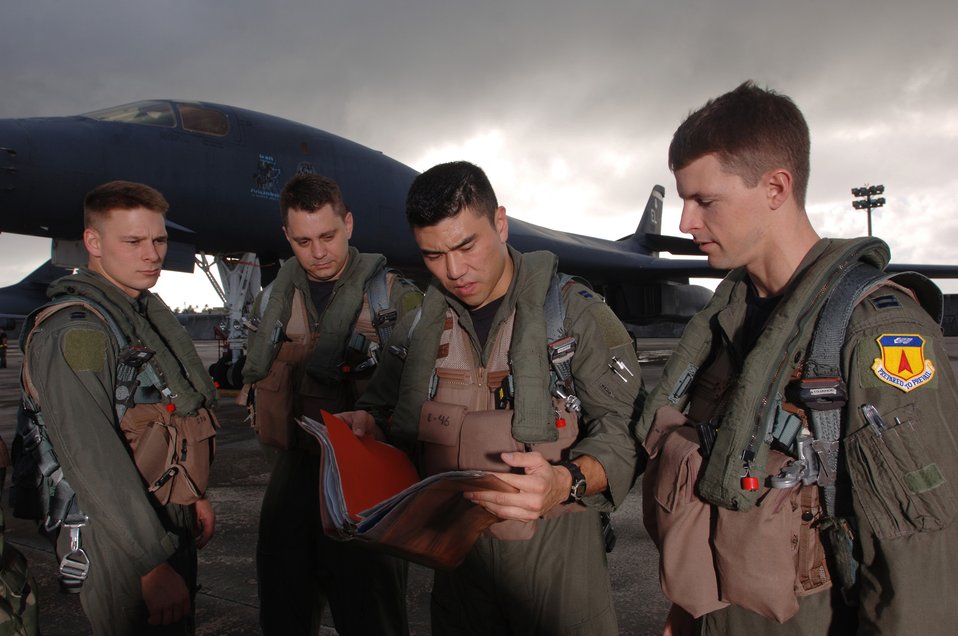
B-1B Lancers

ANDERSEN AIR FORCE BASE, Guam (AFPN) -- (From left) Capts. Cliff Chapman, Ray Benson, Ivin Vian and Ryan Sweeney conduct a briefing before a morning sortie. The Airmen are B-1B Lancer aircrew members from the 34th Bomb Squadron at Ellsworth Air Force Base, S.D. The unit is here to provide the U.S. Pacific Command a continuous bomber presence in the Asia-Pacific region.